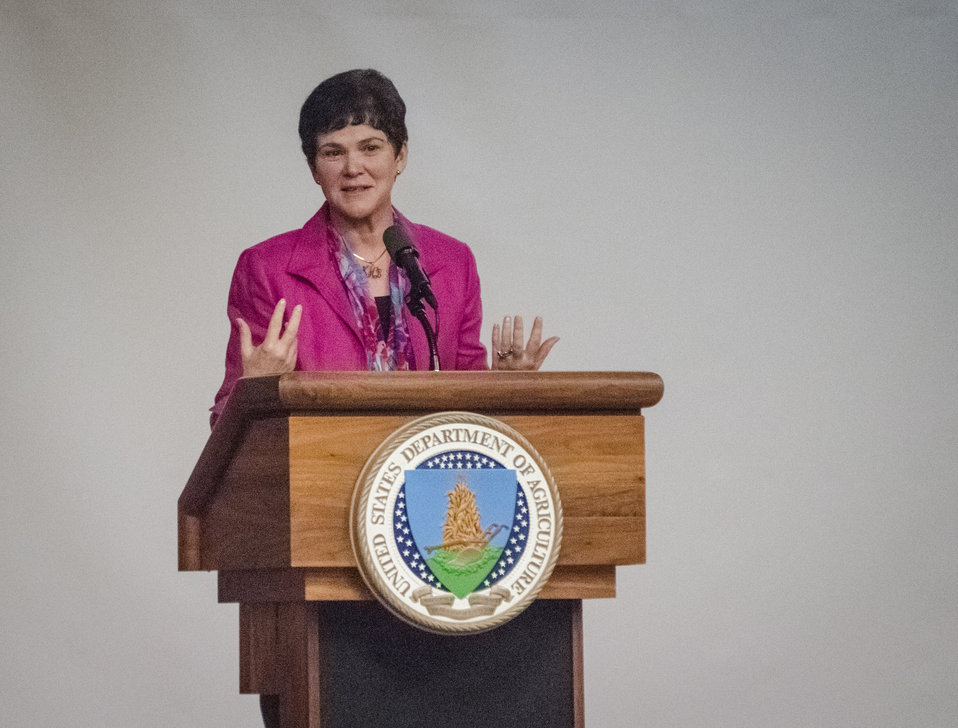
Agriculture Deputy Secretary Krysta Harden speaks at the U.S. Department of Agriculture’s (USDA) Rural Development’s (RD) 2nd Annual Cultural Transformation kickoff opening ceremony and forums, themed “Employees Influencing Change,” on Tuesday, Aug. 13, 2013 at USDA in Washington, D.C.